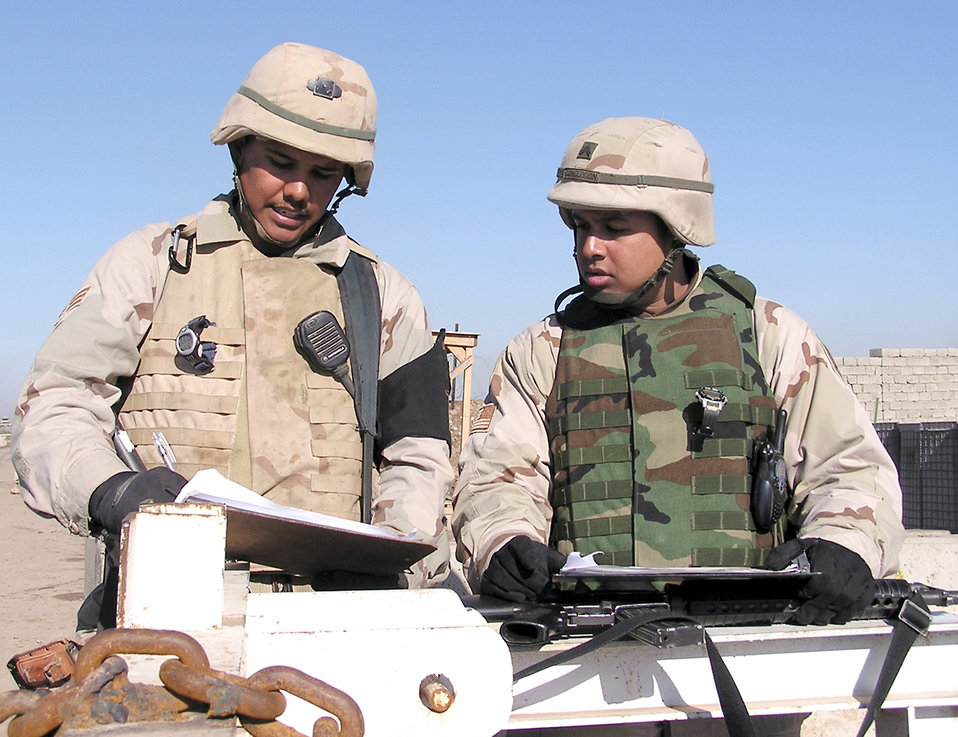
Escorts keep base safe

KIRKUK AIR BASE, Iraq -- Senior Airman Justin Yazza (left) goes over the priority access list here with Army Cpl. David Concepcion. The list tells escorts which laborers to grant priority access to on any given day. Airman Yazza is assigned to the 506th Air Expeditionary Group's escort flight and is deployed from Barksdale Air Force Base, La.